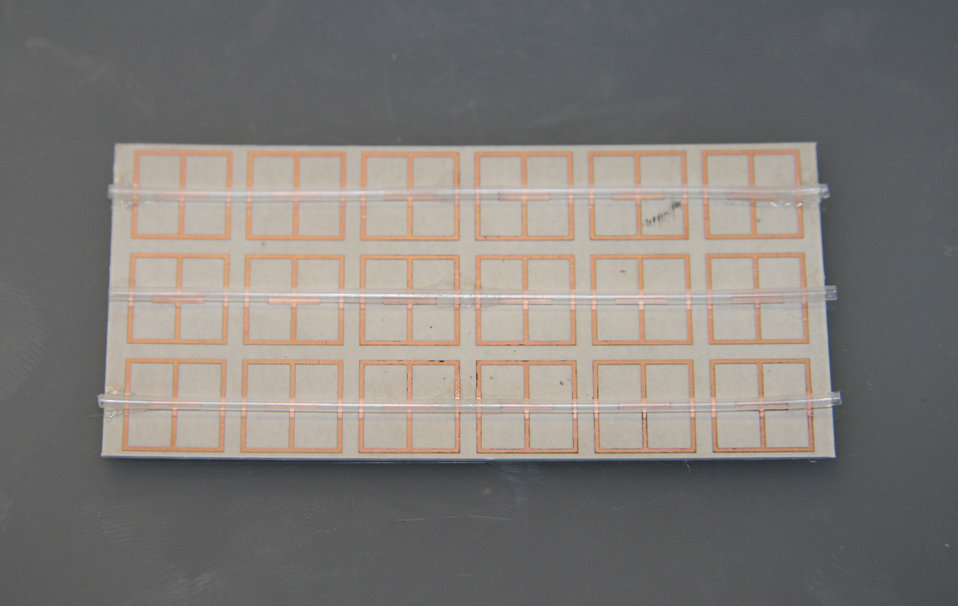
Metasurface

NIST's fluid-tunable 'metasurface' consists of copper structures and plastic tubing mounted on composite board. The presence of water in the tubing changes the resonant frequency at which the metasurface absorbs and stores energy.